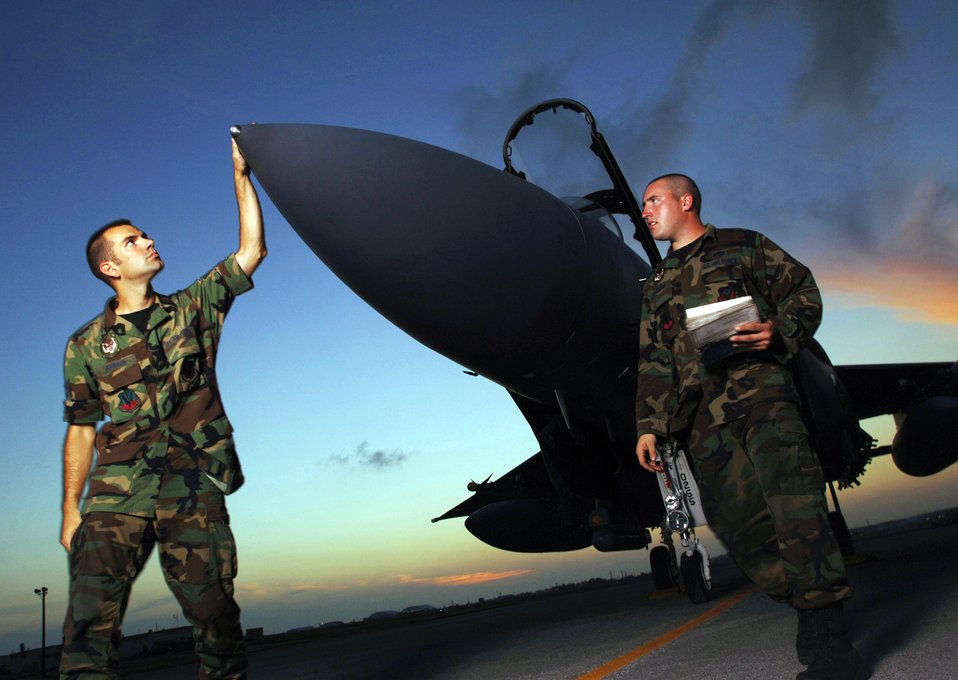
Airmen support PACAF operations while deployed

KADENA AIR BASE, Japan -- Staff Sgts. Andrew Johnson (left) and Brian Goodman inspect an F-15E Strike Eagle. About 300 Airmen from Mountain Home Air Force Base, Idaho, are here supporting U.S. Pacific Command operations as part of an air and space expeditionary force tasking. The Airmen are crew chiefs with the 391st Expeditionary Fighter Squadron.